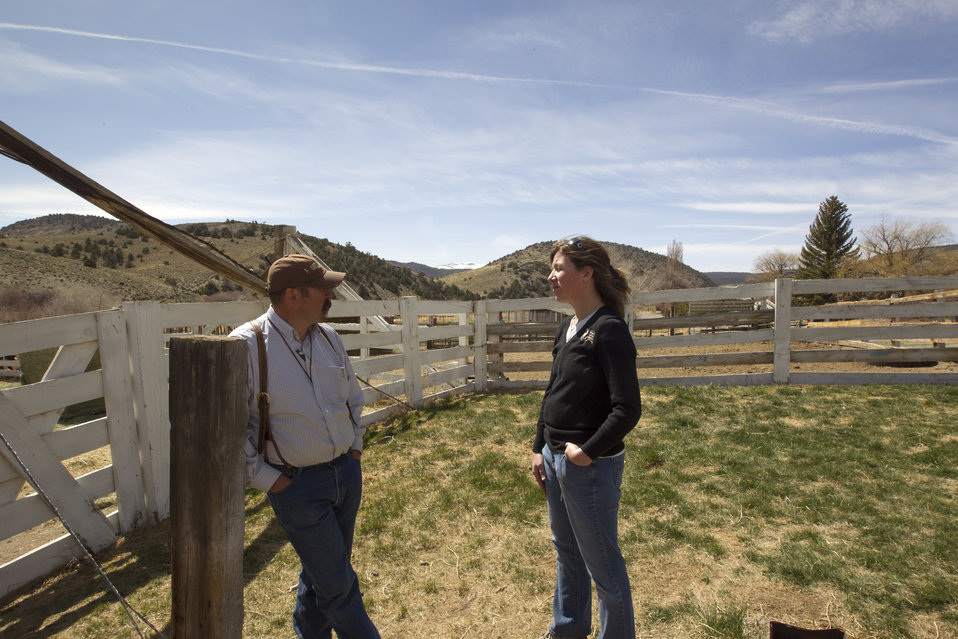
Landowner with Partners for Fish & Wildlife Program Biologist